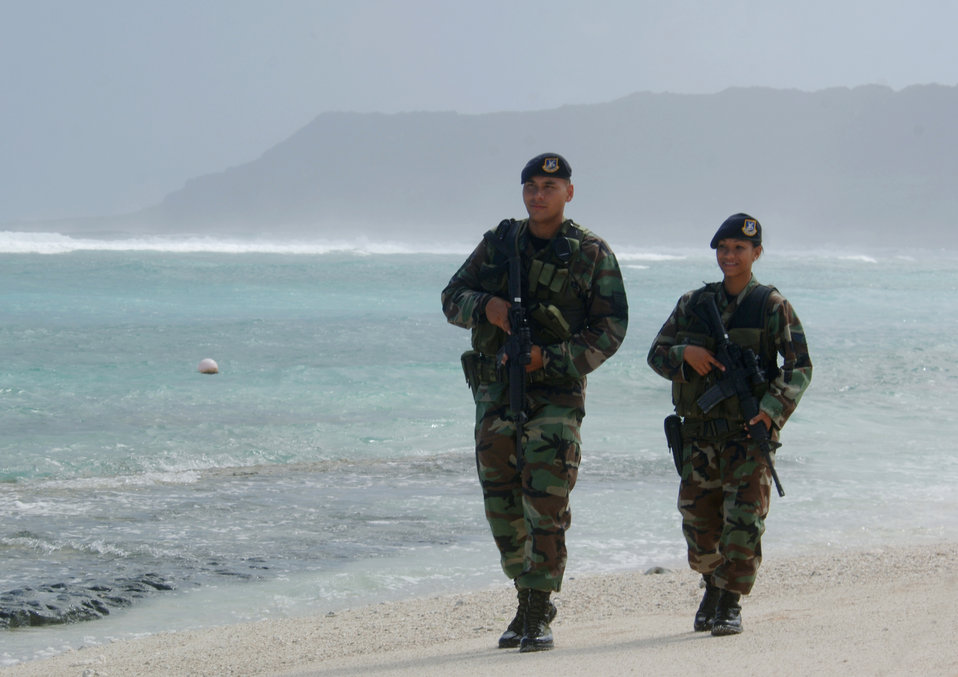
Airman on patrol

ANDERSEN AIR FORCE BASE, Guam (AFPN) -- Senior Airman Maria Ronquillo and Staff Sgt. Michael Quitugua patrol Tarague Beach here. Both Airmen are assigned to the Guam Air National Guard's 254th Security Forces Squadron.